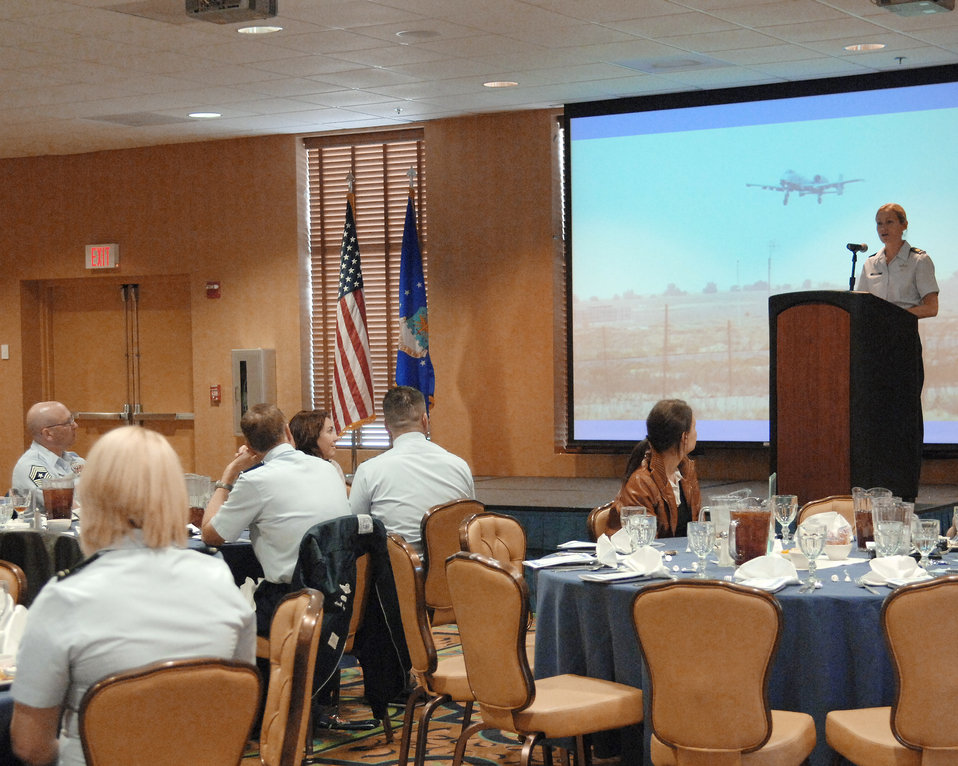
OIF hero shares her story

Maj. Kim Campbell spoke to Women's History Month luncheon guests March 15, 2010 at Davis-Monthan Air Force Base, Ariz. She talked about details from the mission in which her A-10 Thunderbolt II was hit by enemy fire over Baghdad in April 2003. Major Campbell successfully completed the mission and safely landed her damaged jet. Major Campbell is from the Det. 3 Training Support Squadron, at Davis-Monthan AFB, Ariz.